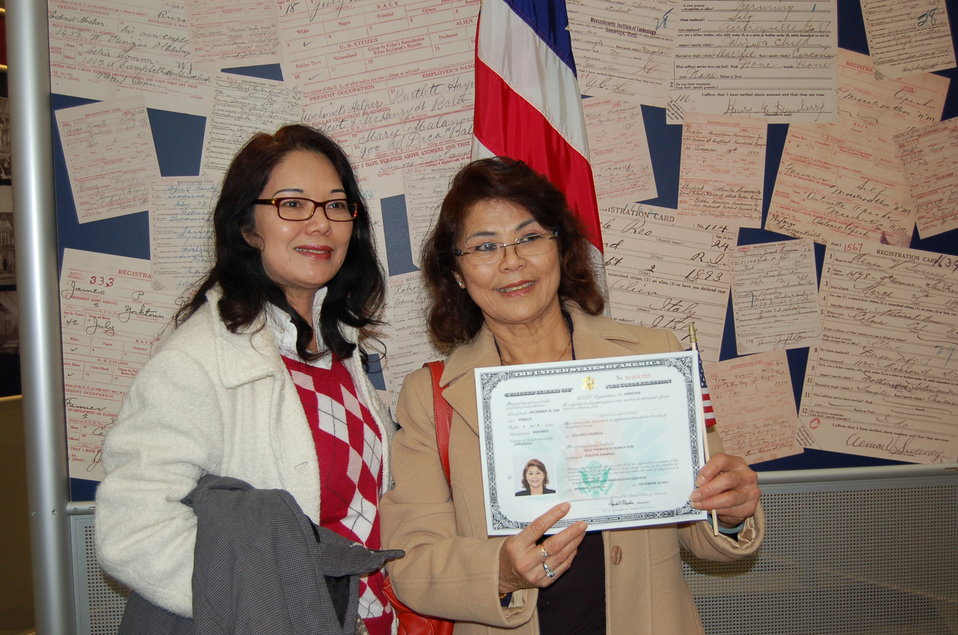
New Citizens